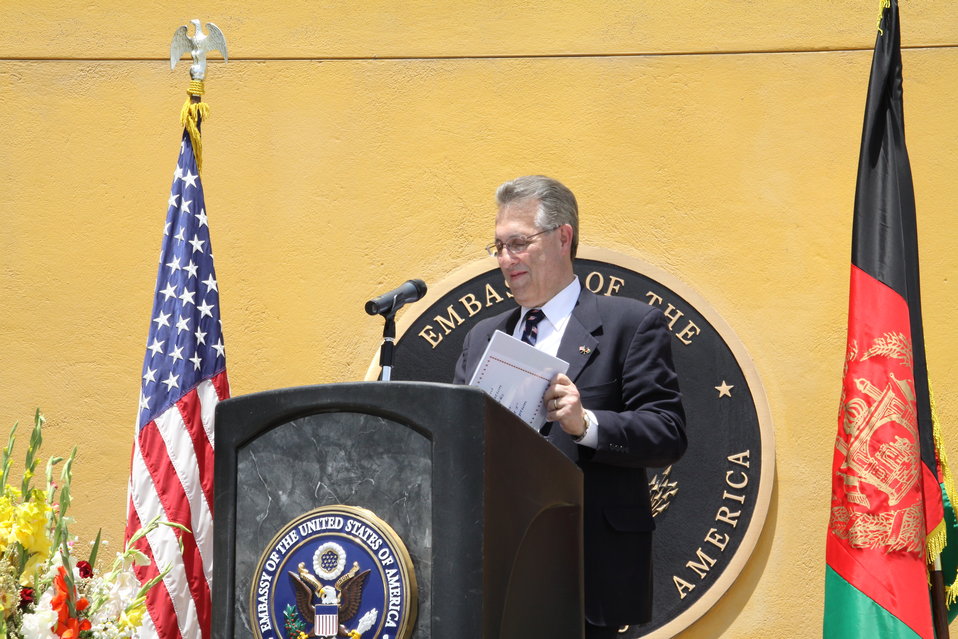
Kabul Official July 4th Celebration